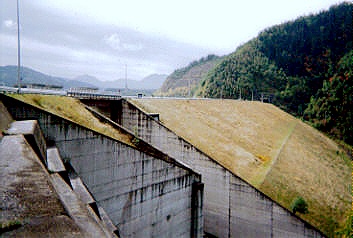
Dam